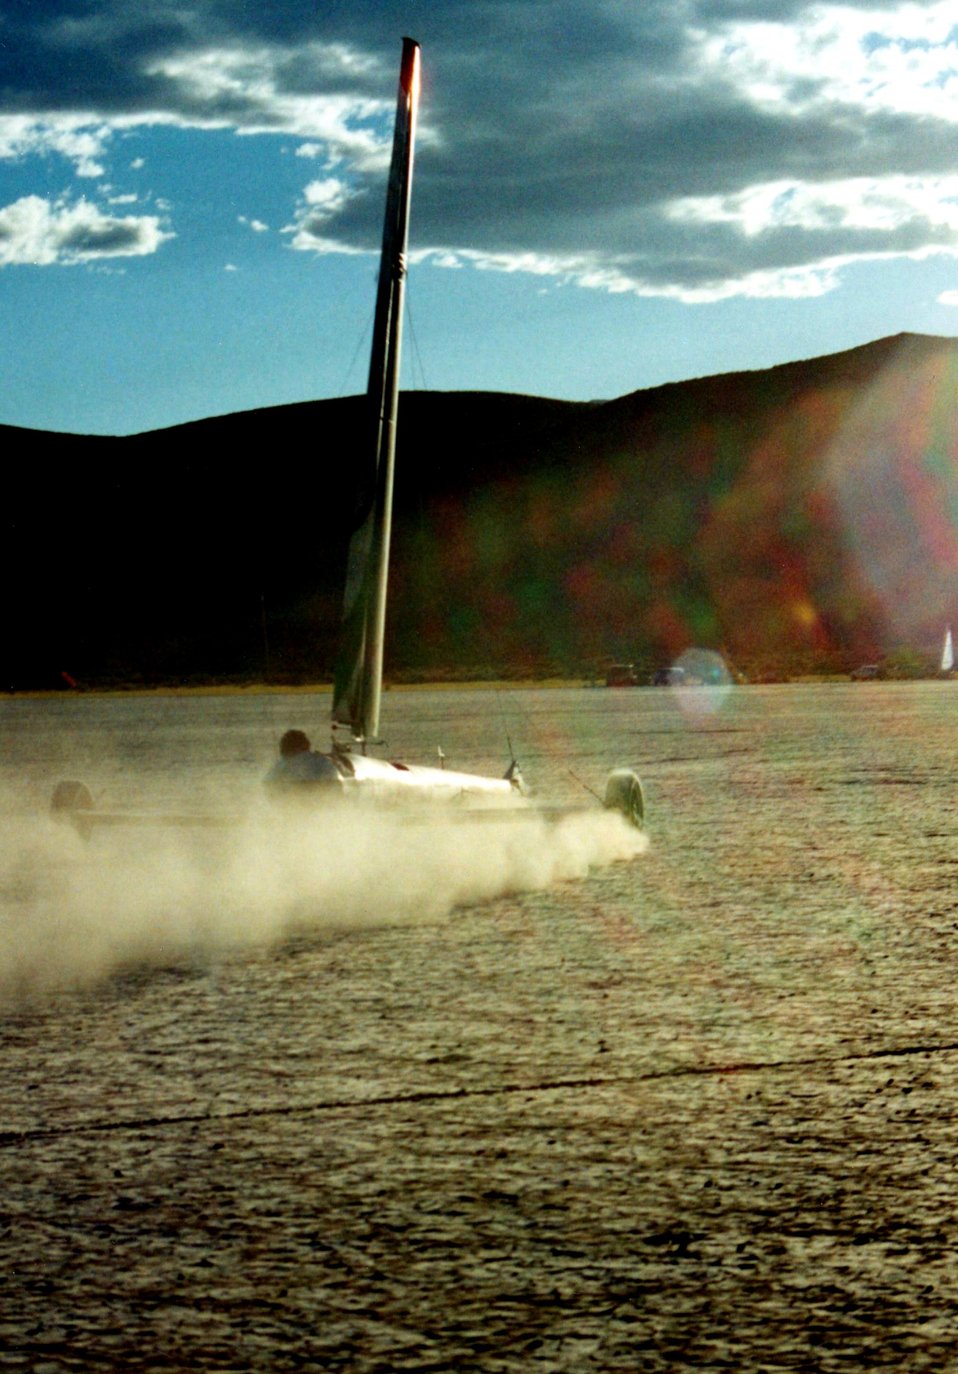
Sand Saling on the Alvord Desert in eastern Oregon.